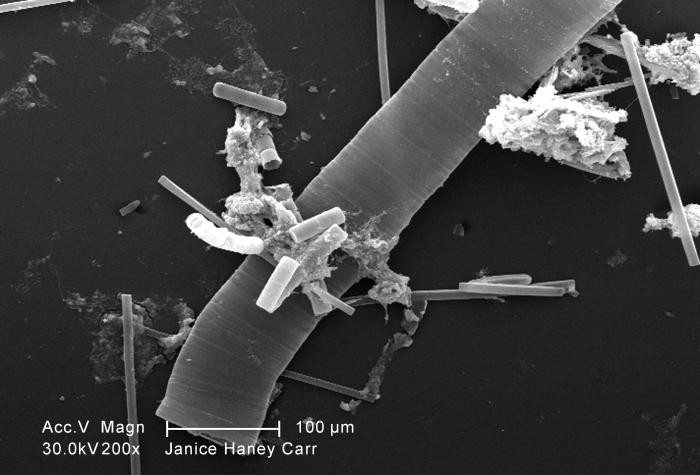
Under a relatively low magnification of 200X, this scanning electron micrograph (SEM) of an untreated water specimen extracted from a wild stream mainly used to control flooding during inclement weather, revealed the presence of unidentified organisms, which included bacteria, protozoa, and algae. In this particular view, numbers of what appeared to be rod-shaped sections of various sizes were scattered throughout the field of view, which though unconfirmed, may have been vegetative in nature, and possibly algal organisms. There were also patches of biofilm present as well. See PHIL 11785 for a colorized version of this image.